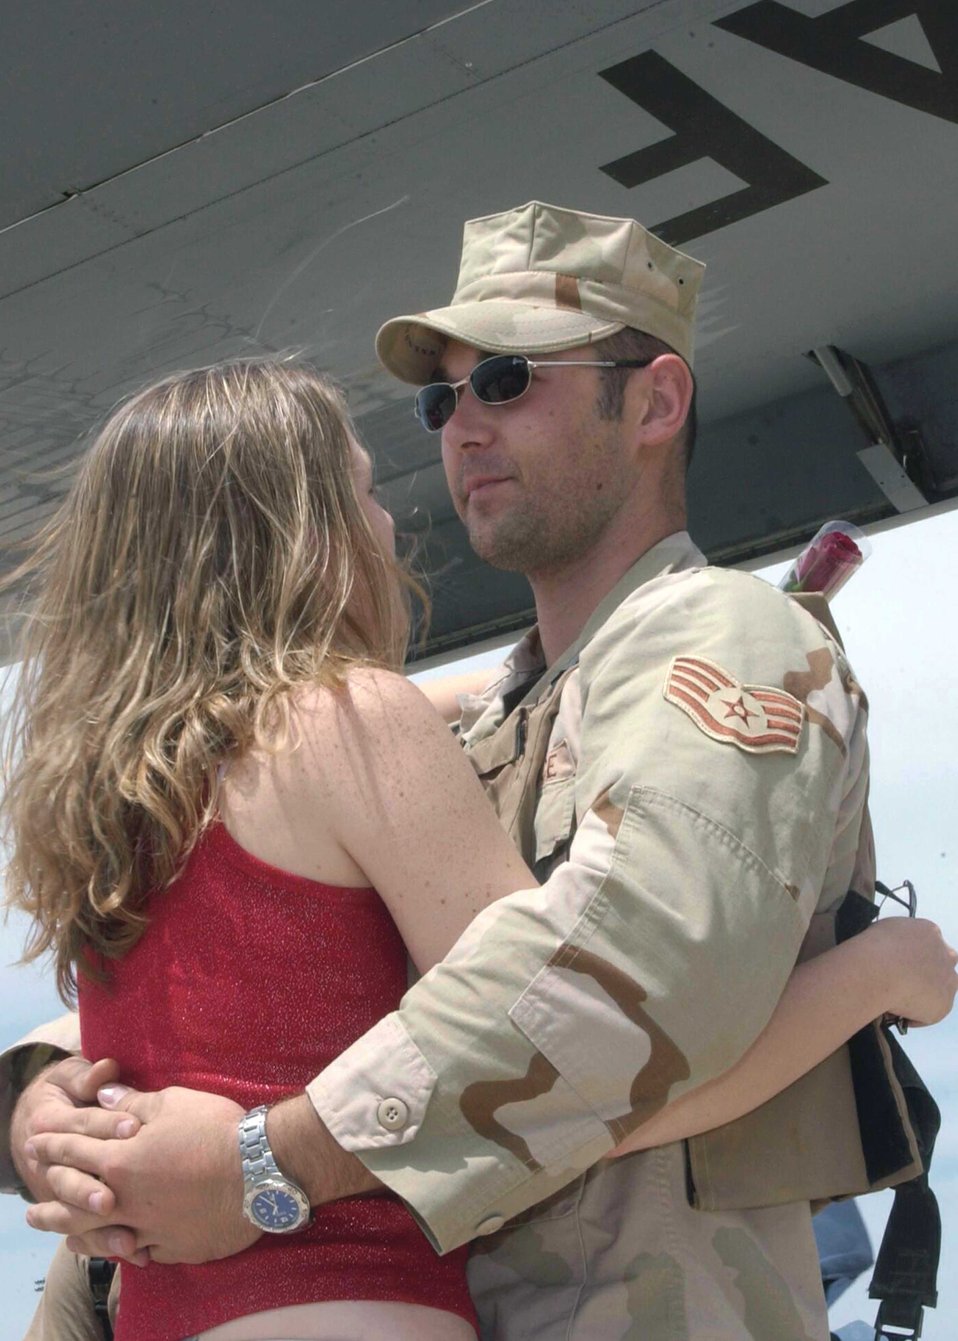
Honey, I'm home

DAVIS-MONTHAN AIR FORCE BASE, Ariz. -- Senior Airman Tara Henson greets her husband, Staff Sgt. Ryan Henson, after coming home from his deployment supporting Operation Iraqi Freedom. Airman Henson is assigned to the 563rd Operations Support Squadron, and Sergeant Henson is a weapons load crew member assigned to the 563rd Maintenance Squadron here.